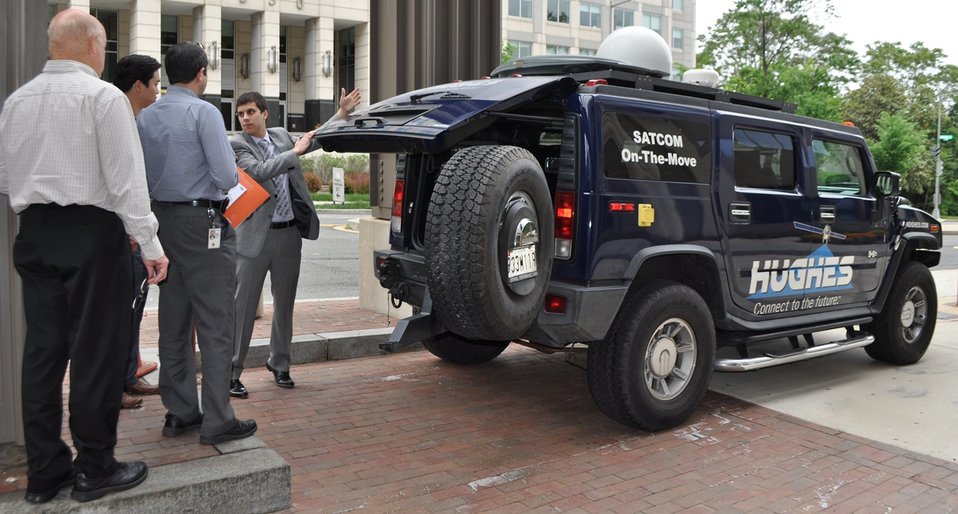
5.14.2014 Satellite Technology Demonstration

Satellite Technology Demonstration at FCC